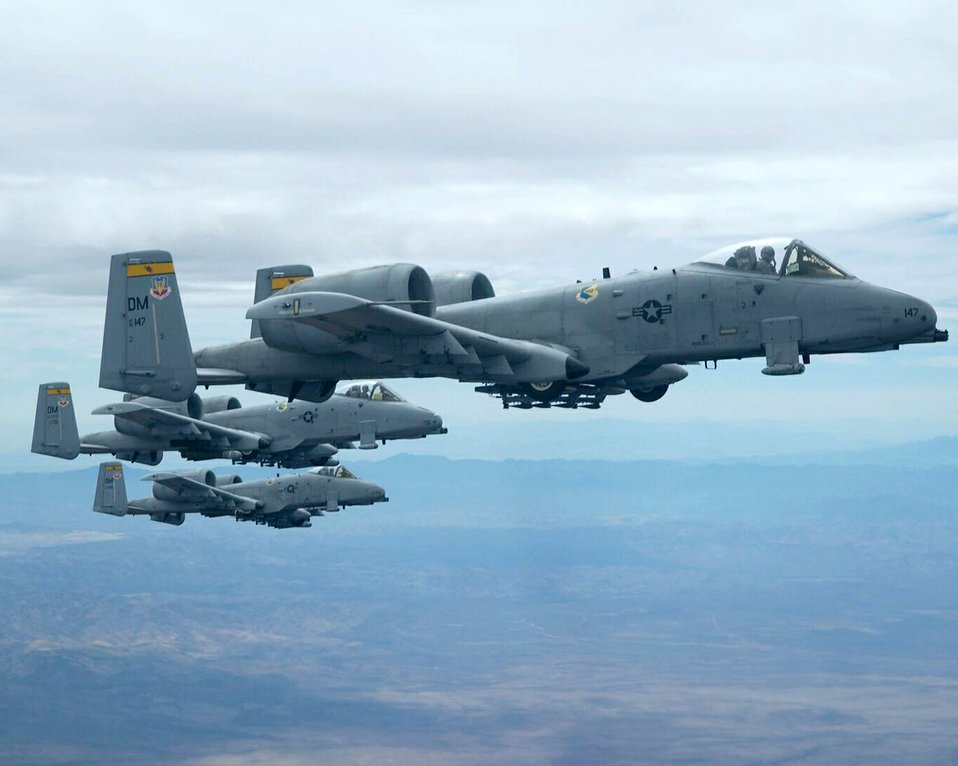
Feb. 12 airpower: A-10s provide close-air support

Three A-10 Thunderbolt IIs fly in formation. A-10s provided close-air support for a scout team that received small arms fire Feb. 11 near Balad, Iraq. The A-10s observed the team apprehend the individuals responsible for the small arms fire and provided reconnaissance until the team returned to their forward-operating base.